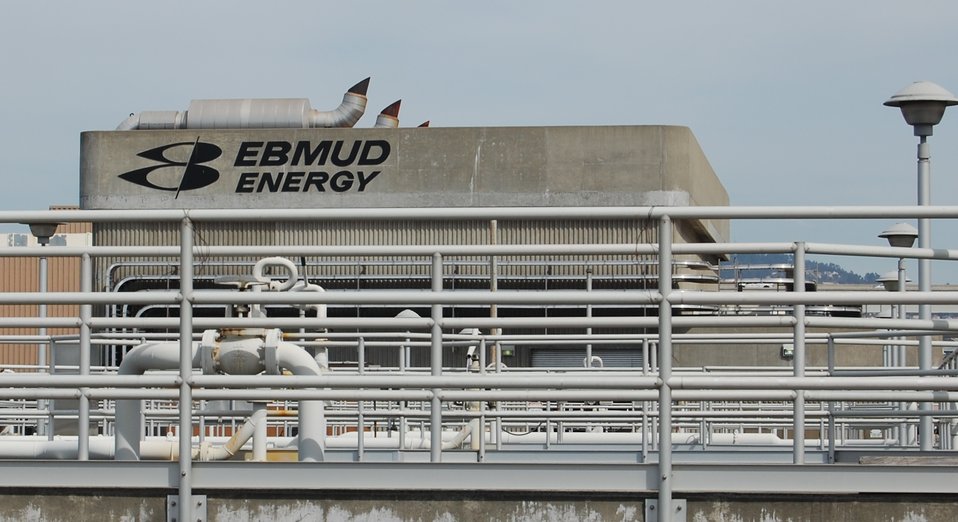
EBMUD: Capturing Methane To Generate Energy

The methane is captured and used to generate a renewable source of energy. If 50% of the food waste generated each year in the U.S. were digested, over 2,508,260 homes could be powered with that electricity for a year.